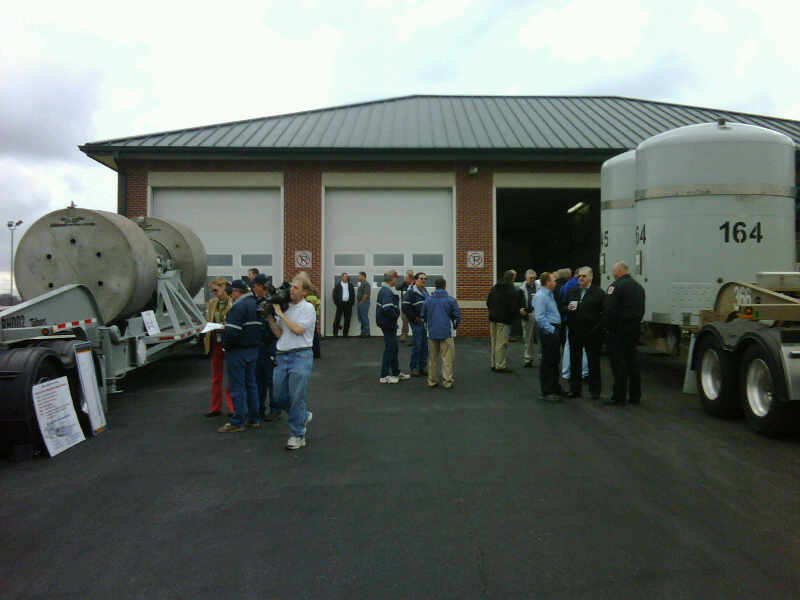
Recovery Act Funds Spur Cleanup of Additional Transuranic Waste Sites

Members of the public gather for a Waste Isolation Pilot Plant road show in Gray, Tenn., in April 2010, in preparation for a new route opening along Interstate 81.